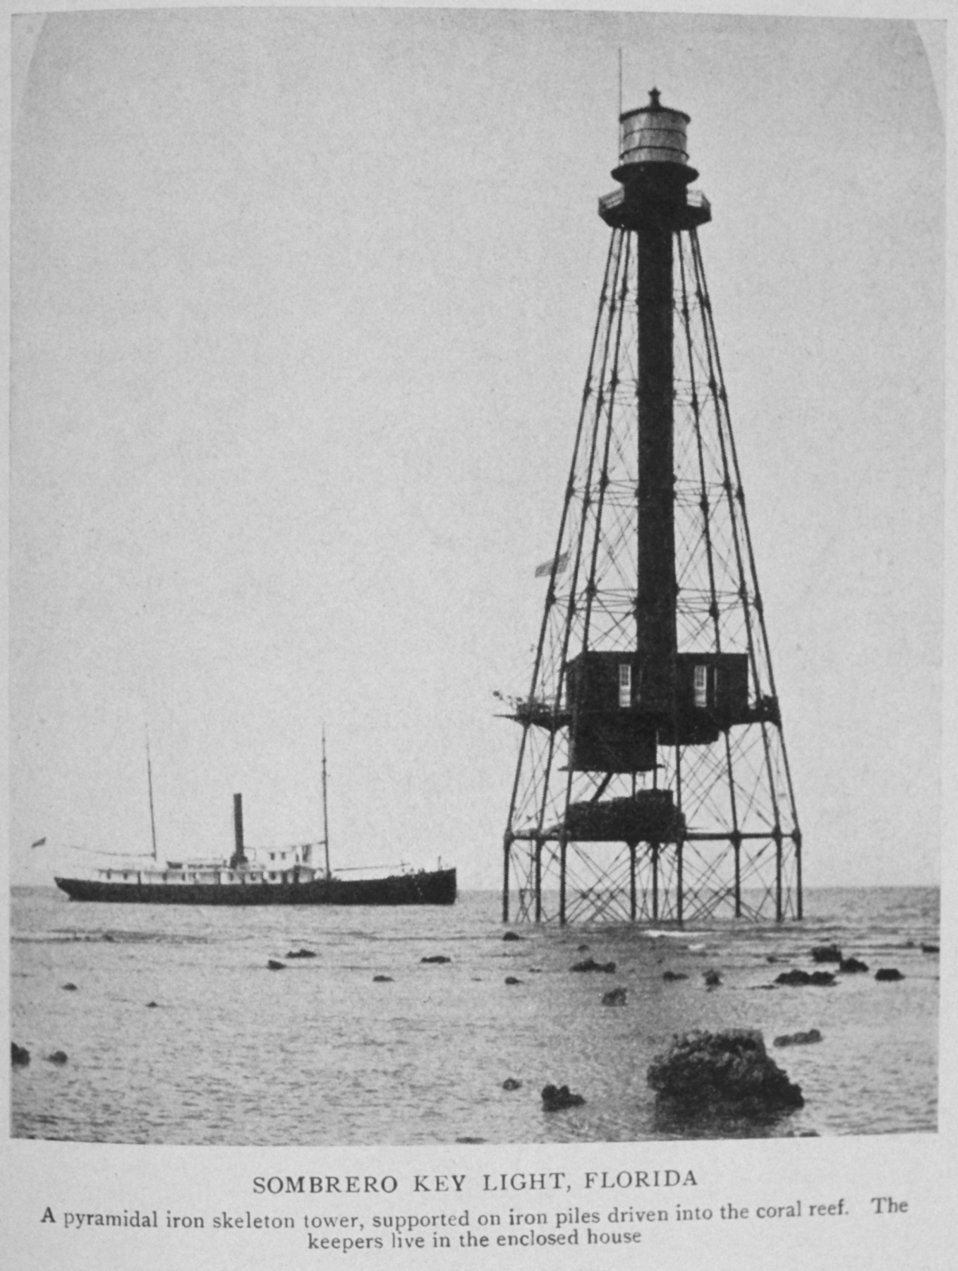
Sombrero Key Light, Florida. A pyramidal iron skeletal tower, supported on iron piles driven into the coral reef. The keepers live in the enclosed house. In: 'Lighthouses and Lightships of the United States' by George R. Putnam, 1917. Houghton Mifflin and Company, Boston. Library Call No. 527.7 P98.